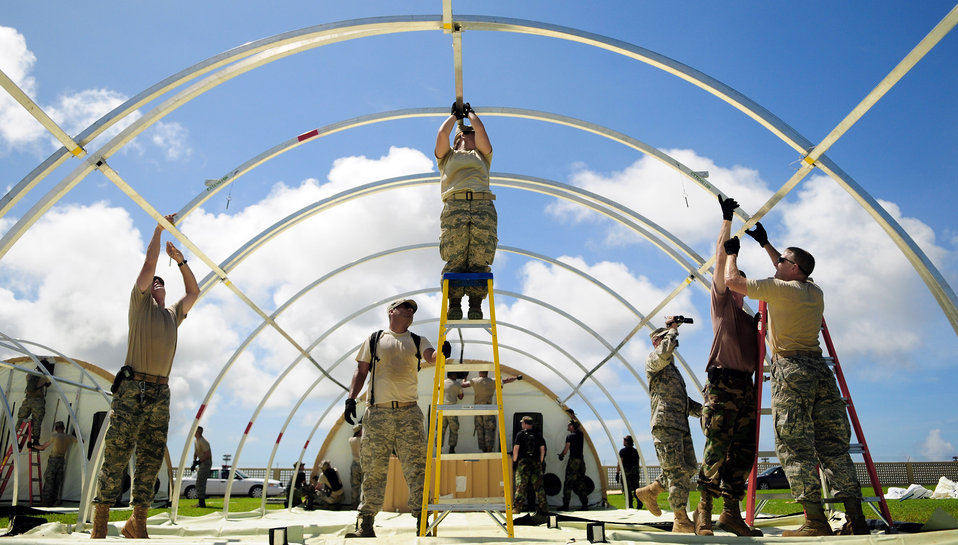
Humanitarian assistance team completes evaluation at Andersen

The 36th Medical Group and the 36th Contingency Response Group work together to construct operational tents during a simulated exercise for the Humanitarian Assistance Rapid Response Team July 15 at Andersen Air Force Base, Guam. The HARRT is equipped to operate in an austere permissive environment during Phase III of disaster relief operations, supporting 350 to 500 patients per day and can be fully operational within six hours of arrival at the disaster site.